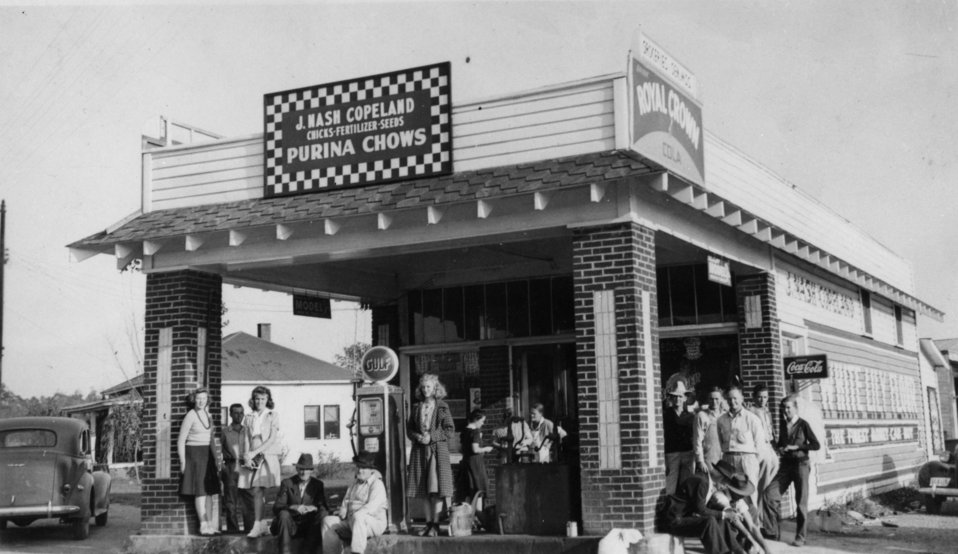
Early settlers at Oak Ridge